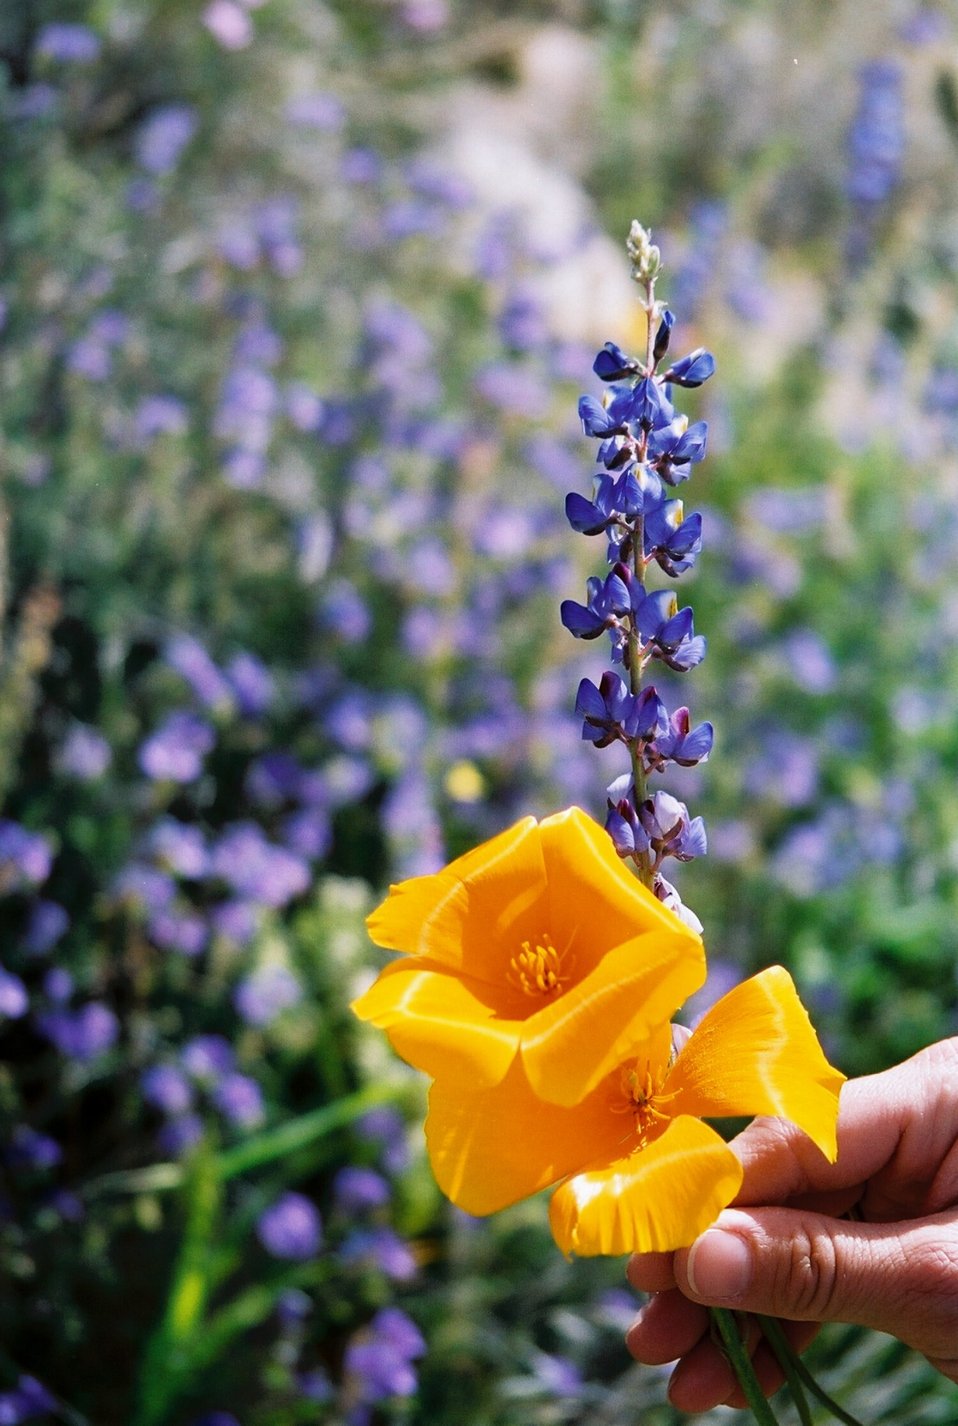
Many different kinds of beautiful wildflowers grow in the Agua Fria National Monument.